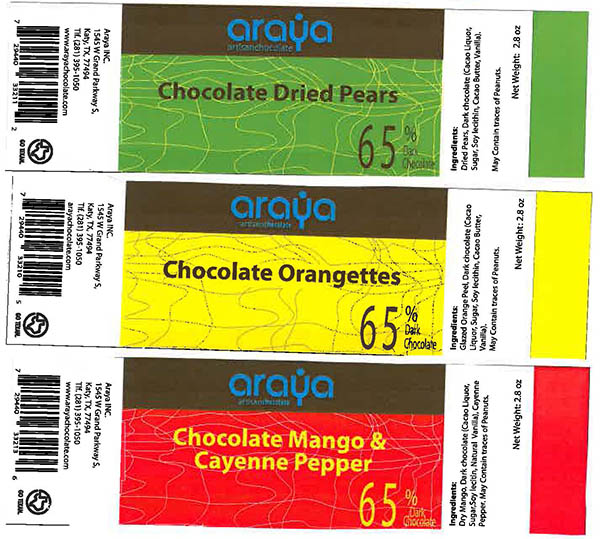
RECALLED – Chocolate Bars, Marshmallows, Dry Fruits, and Chocolate Gift Boxes

January 23, 2014 – Product Recall – Araya Inc. Issues Allergy Alert on Undeclared Tree Nuts, Wheat, Milk and Soy in Their Chocolate Bars, Marshmallows, Dry Fruits and Chocolate Gift Boxes.